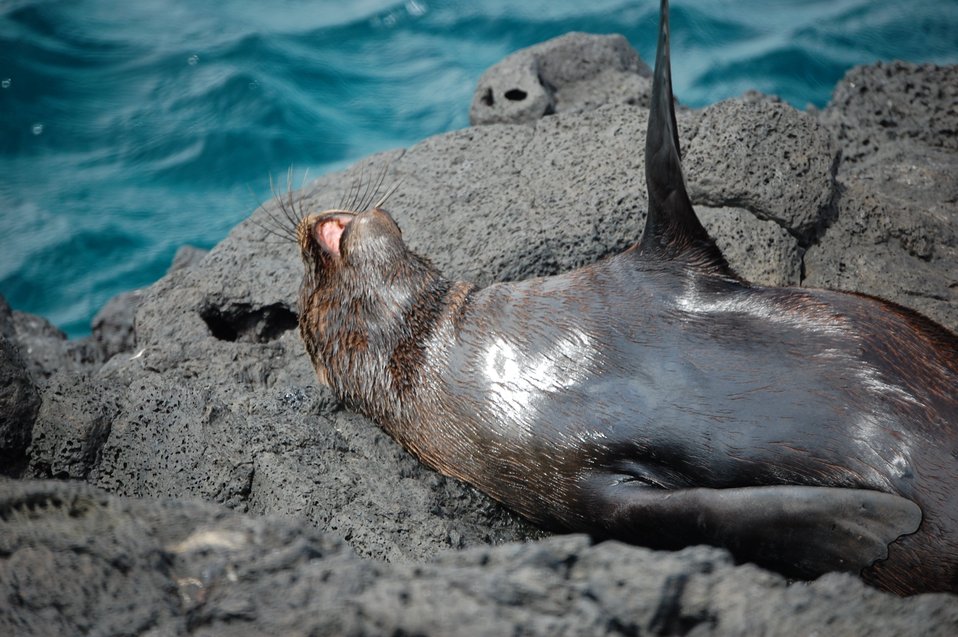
Fur seal.